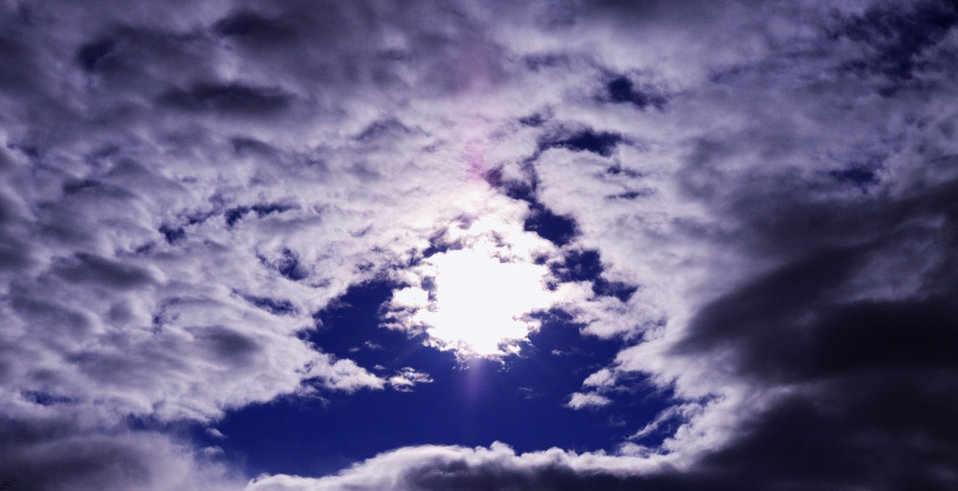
The sun in hdr

The sun in between 2 storms. 3 raw images compressed by photomatrix then processed with photomatrix tone mapper and photoshop..